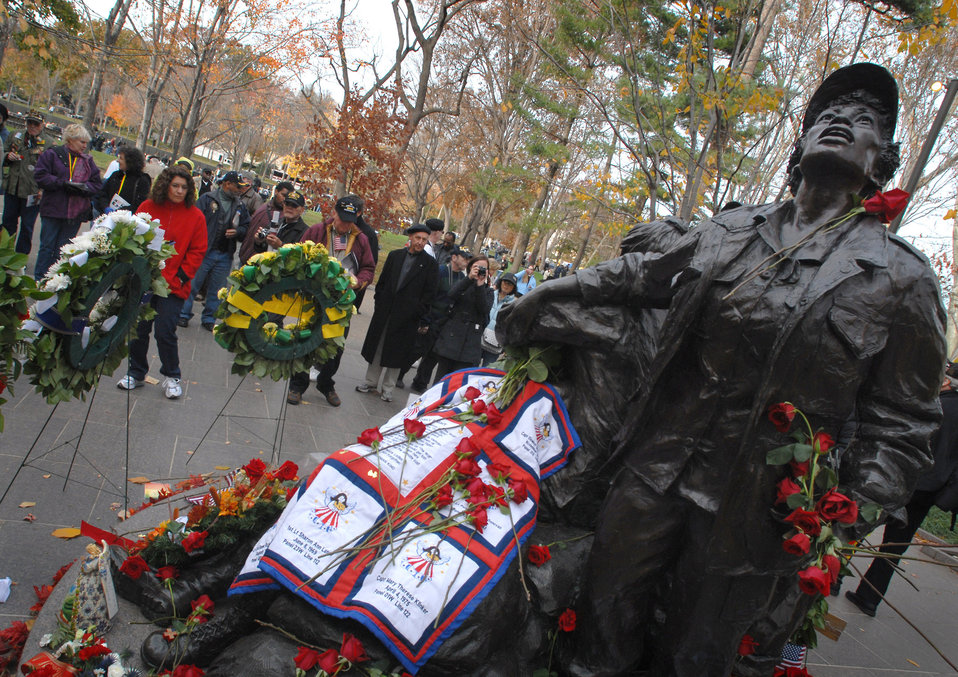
Memorial honors service of women veterans

Visitors gather around the Vietnam Women's Memorial as part of the Veterans Day observance Nov. 11 at the Vietnam Veterans Memorial Wall in Washington. The sculpture in the round features four figures, this side showing a nurse searching for help from above.